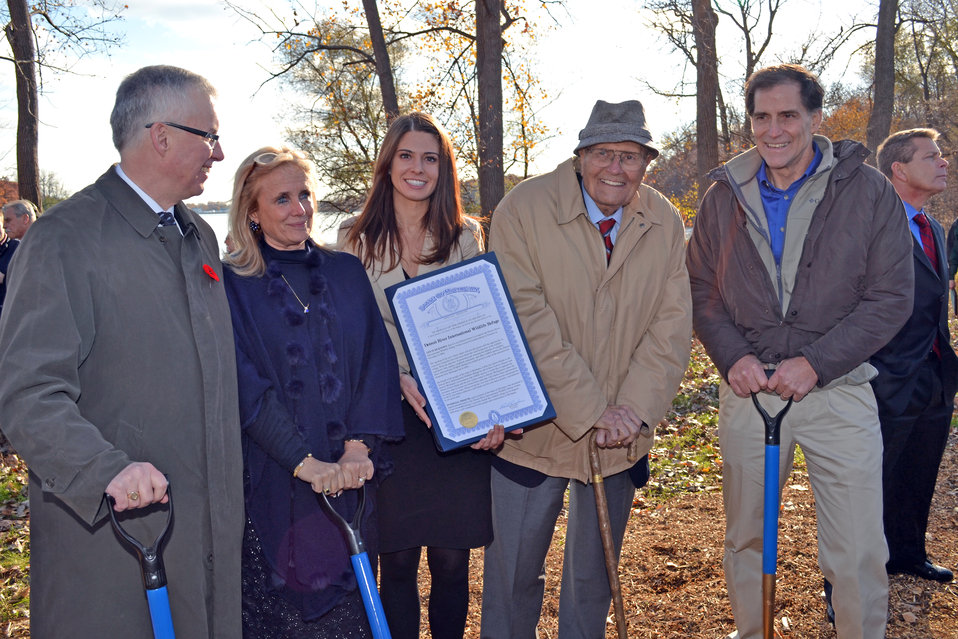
Proud Partners

Detroit River International Wildlife Refuge groundbreaking celebration.